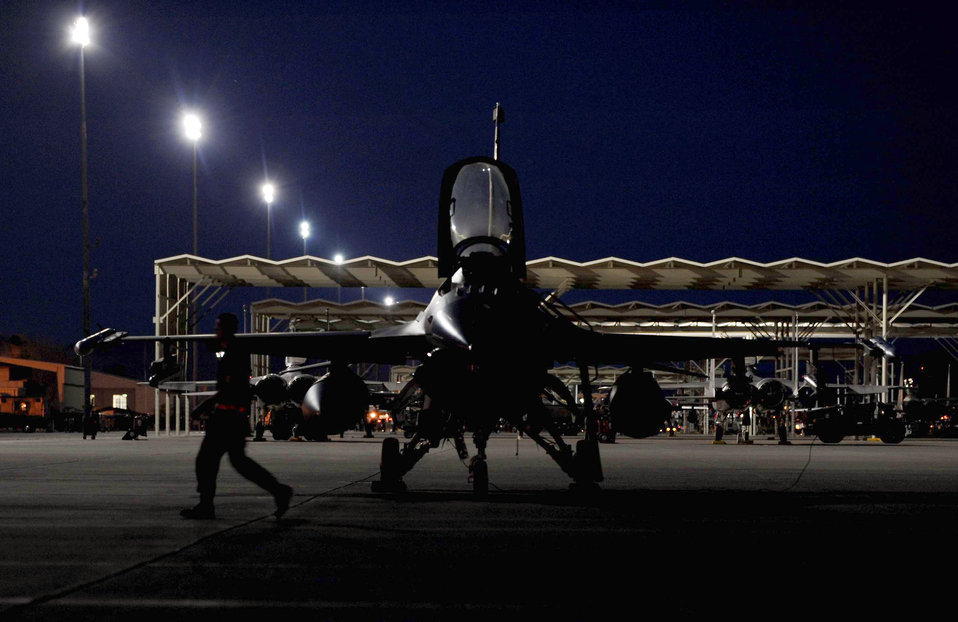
Nighttime operations

An F-16 Fighting Falcon crew chief assigned to the 52nd Aircraft Maintenance Squadron from Spangdahlem Air Base, Germany, walks past his mission-ready jet before night flying operations during Red Flag 09-3 Feb. 26 at Nellis Air Force Base, Nev. Red Flag is a multinational exercise providing a realistic environment to practice combat scenarios.